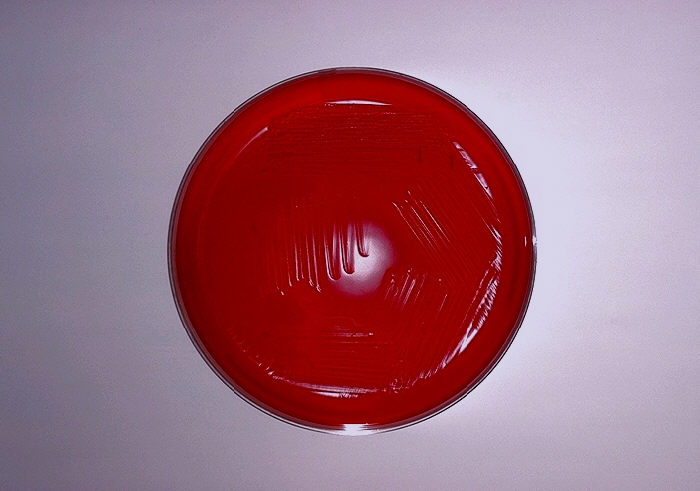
Blood agar plate culture of Cardiobacterium hominis.